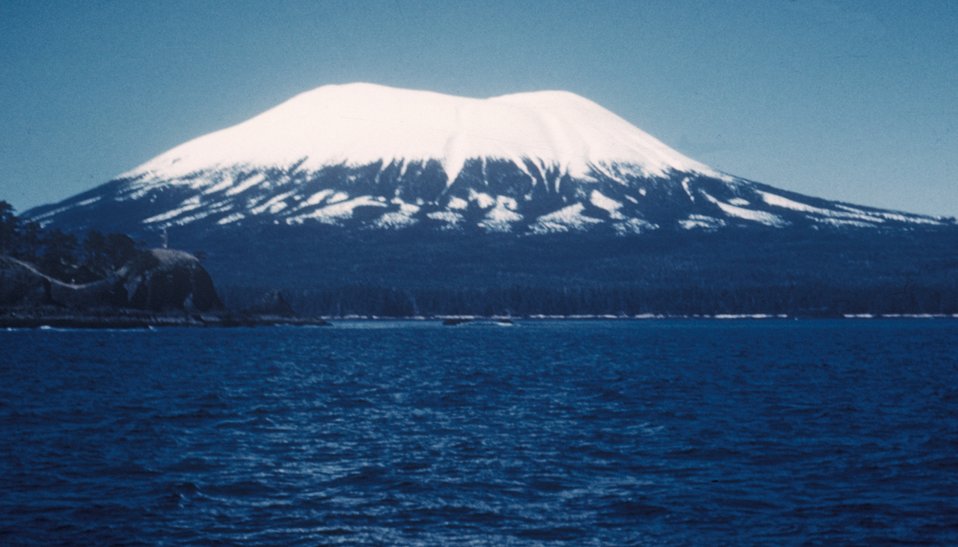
Mount Edgecumbe, a dormant volcano on the south end of Kruzof Island, can be seen from Sitka.